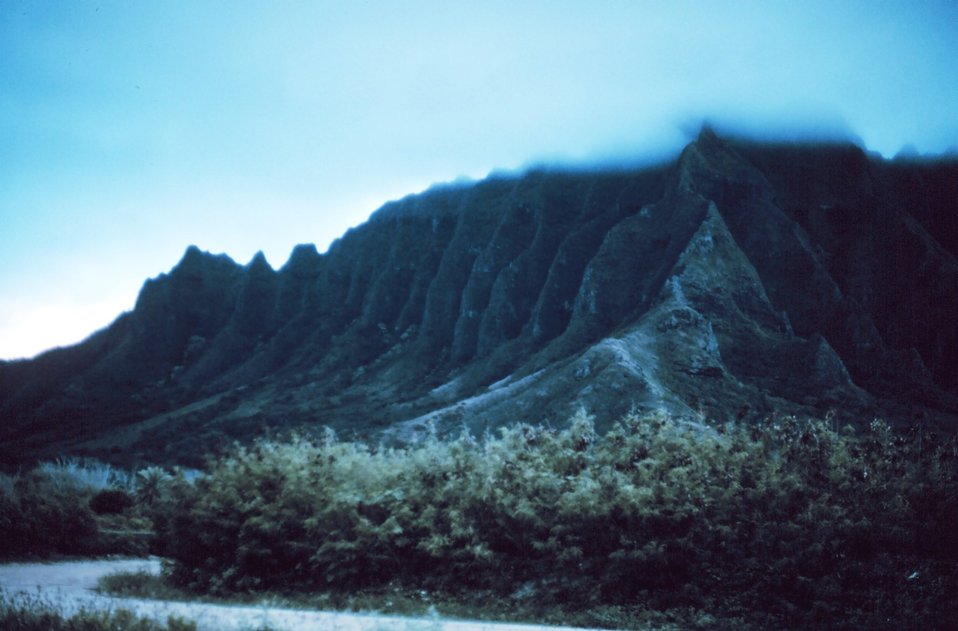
Knife-edged ridge showing effects of erosion with multiple steep stream valleys